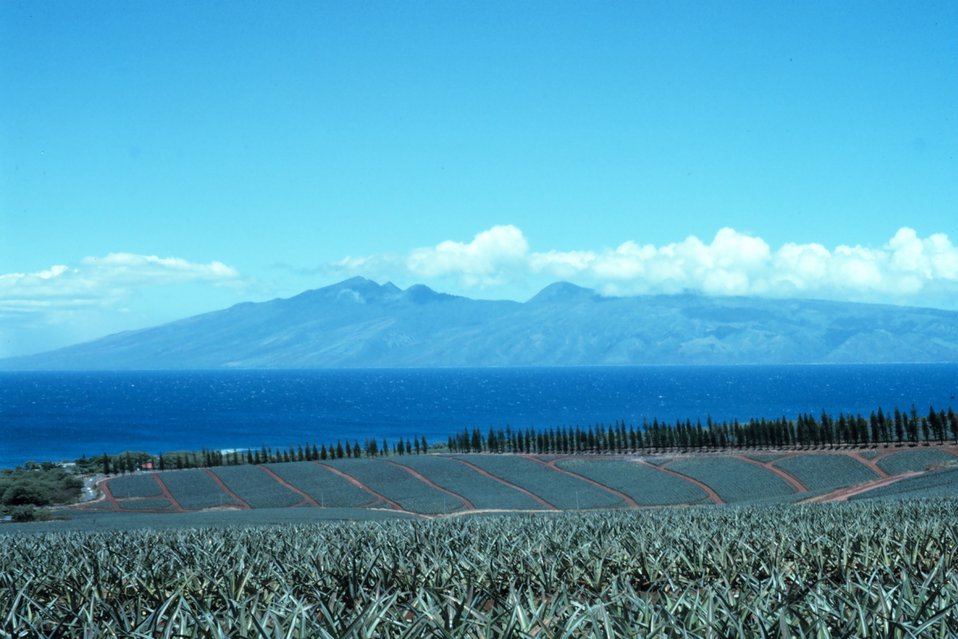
Napili Bay from Pineapple Hill